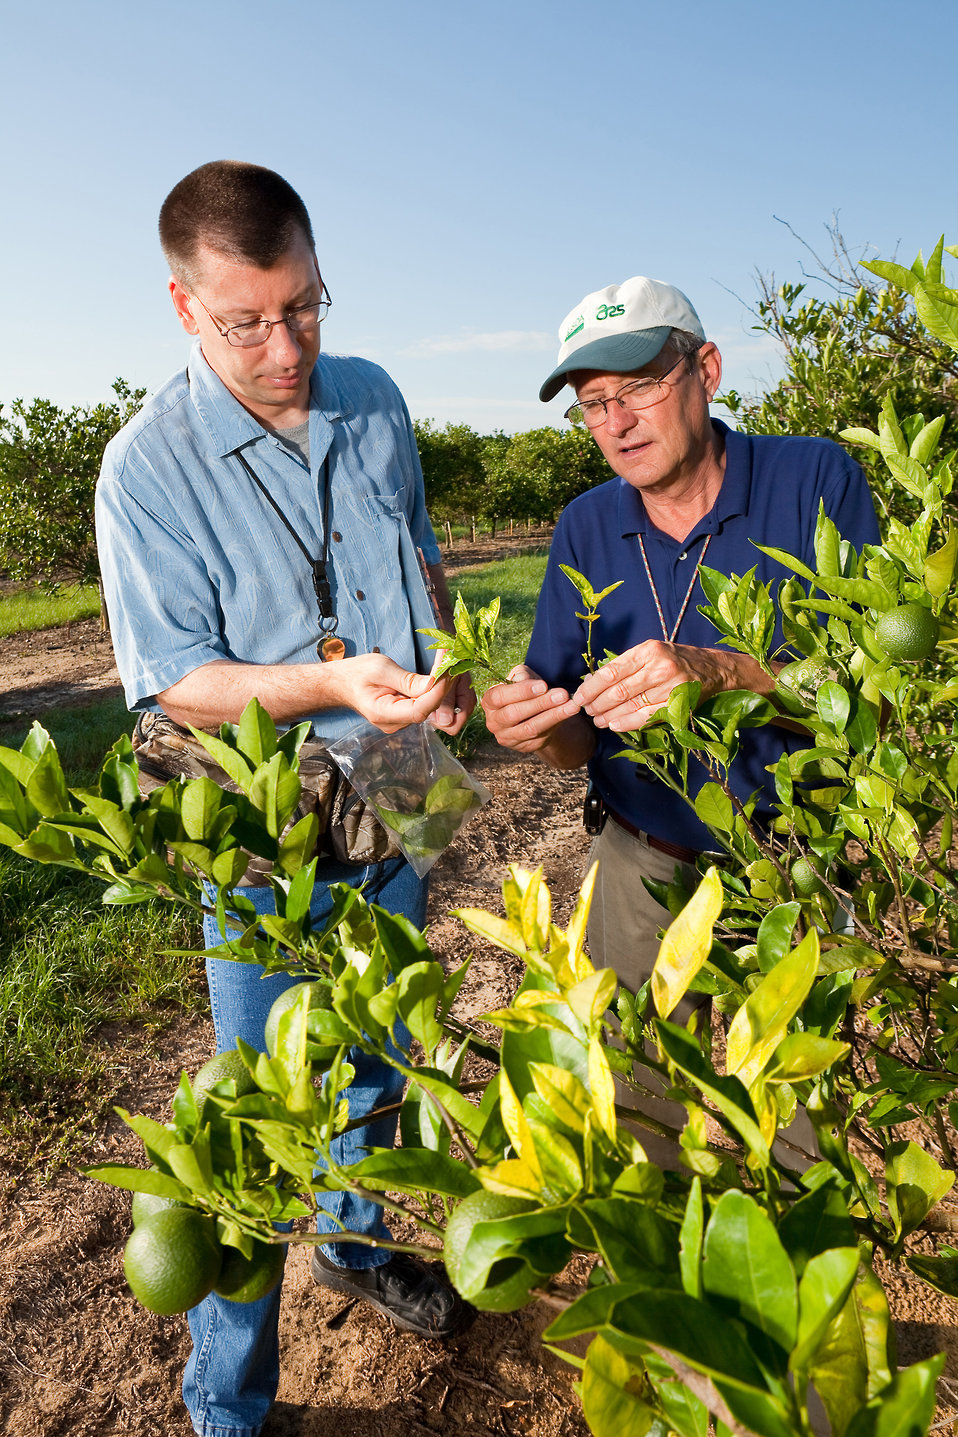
U.S. Department of Agriculture (USDA) Agriculture Research Service (ARS) entomologists Matt Hentz and David Hall inspect orange trees for Asian citrus psyllids that have been killed by the beneficial fungus Hirsutella citriformis in Florida on May 21, 2012.